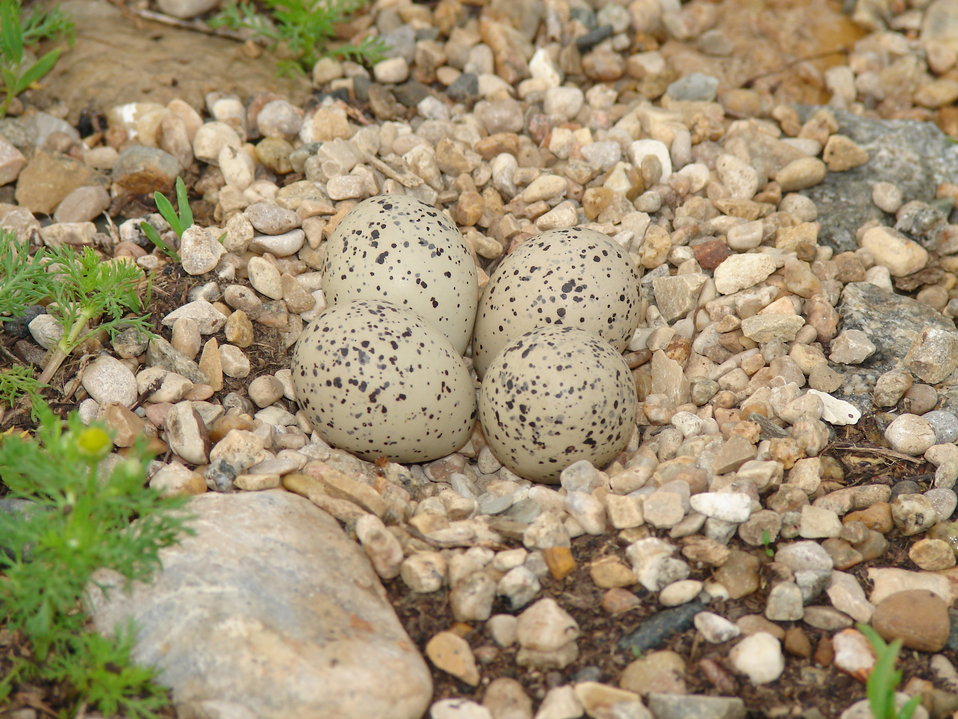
Piping Plover Nest

Jackie Jacobson/USFWS